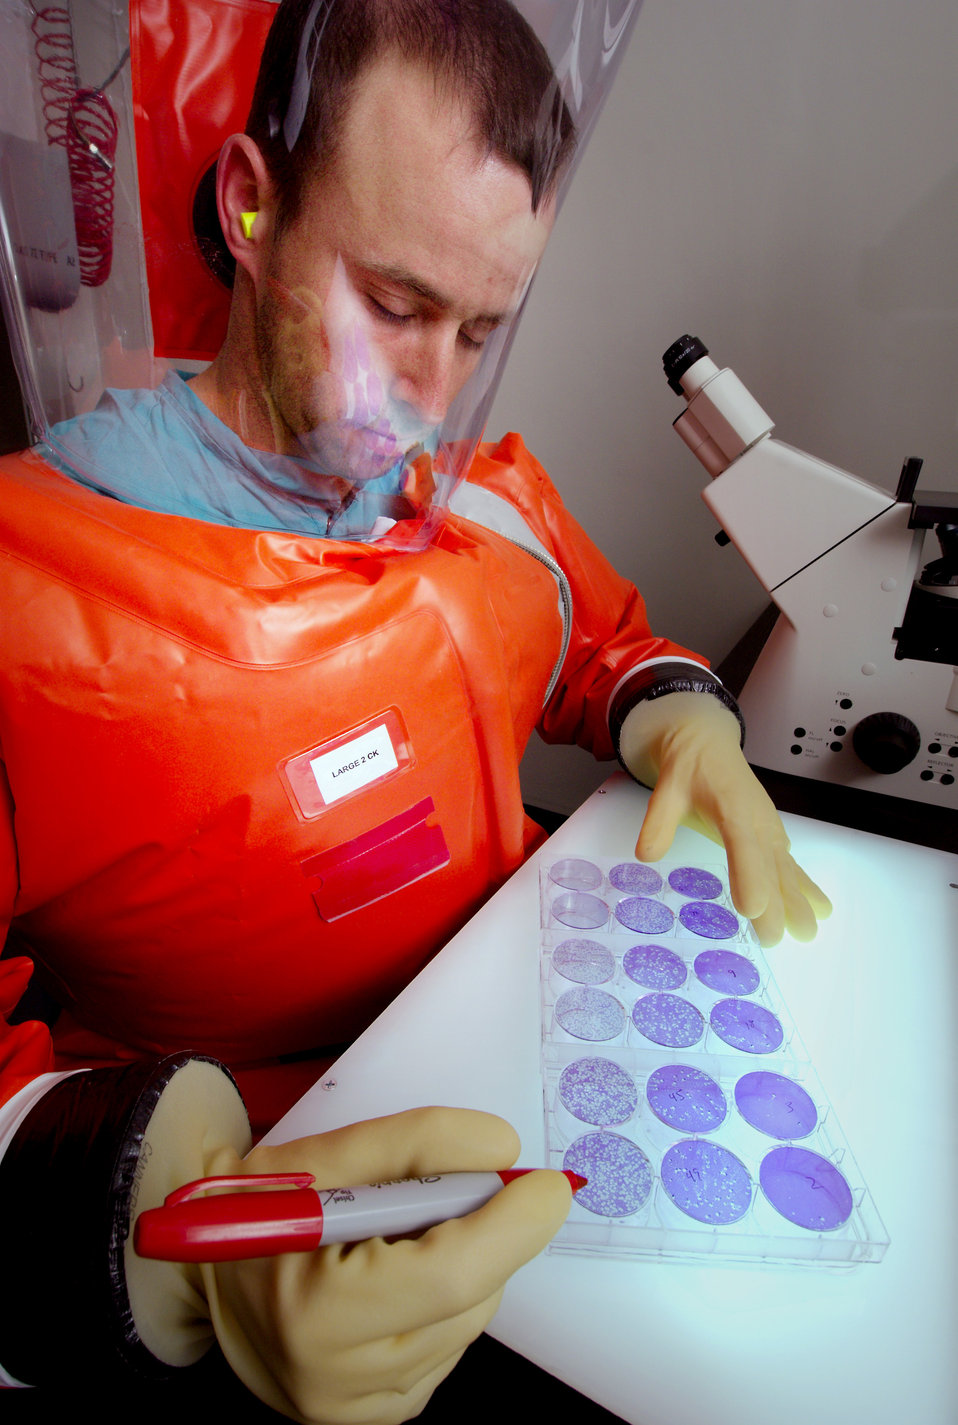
Depicted here in this 2007 photograph, was a Centers for Disease Control microbiologist, and Special Pathogens Branch (SPB) staff member, as he was in the process of counting viral plaques within fixed monolayers of cells, which had been set atop a light box. While inside the organization's Biosafety Level 4 (BSL-4) laboratory, this activity was taking place, thereby, enabling this scientist to titrate a viral stock. This laboratorian was outfitted in an orange, air-tight, self-contained, positively-pressurized suit, which kept him free of possible contamination. See PHIL 10728 for another view of this activity.